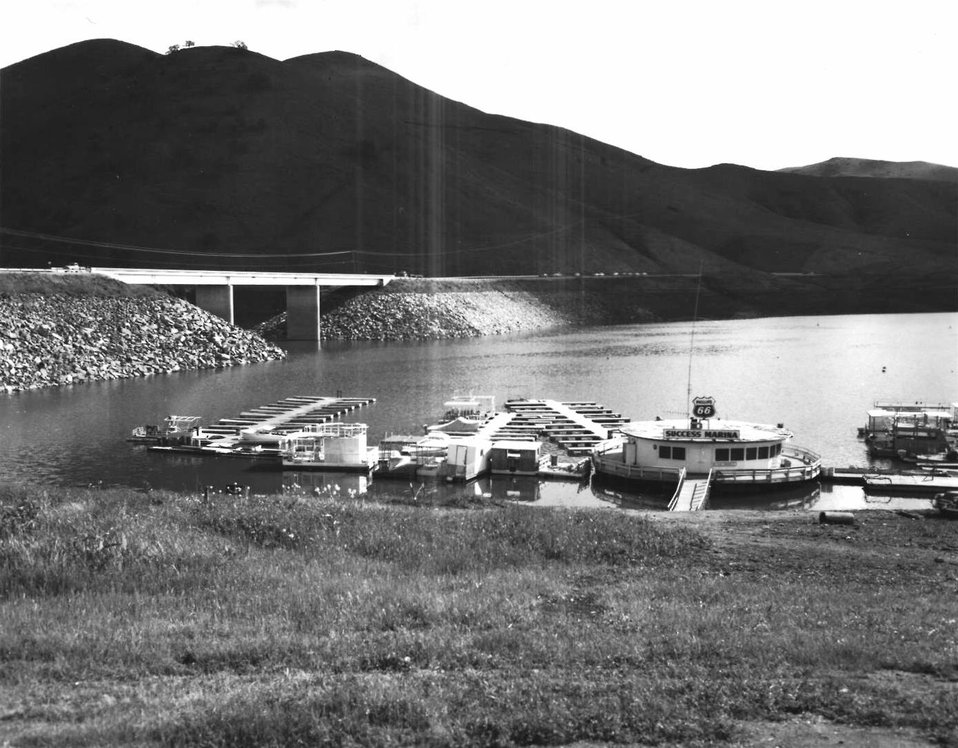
Success Dam

A historical view of the marina at Success Dam, located near Porterville, Calif., March 14, 1968. The U.S. Army Corps of Engineers Sacramento District completed construction of Success Dam in 1961 and the reservoir provides flood risk management, water storage and recreational benefits to the local area.